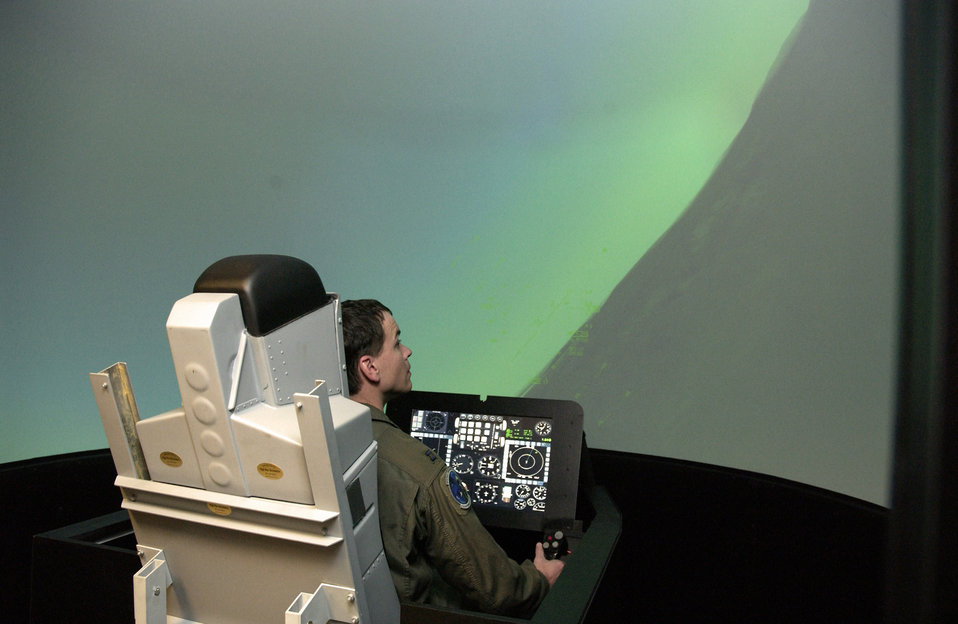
Joint forces exercise includes cyberspace

WRIGHT-PATTERSON AFB, Ohio -- Captain